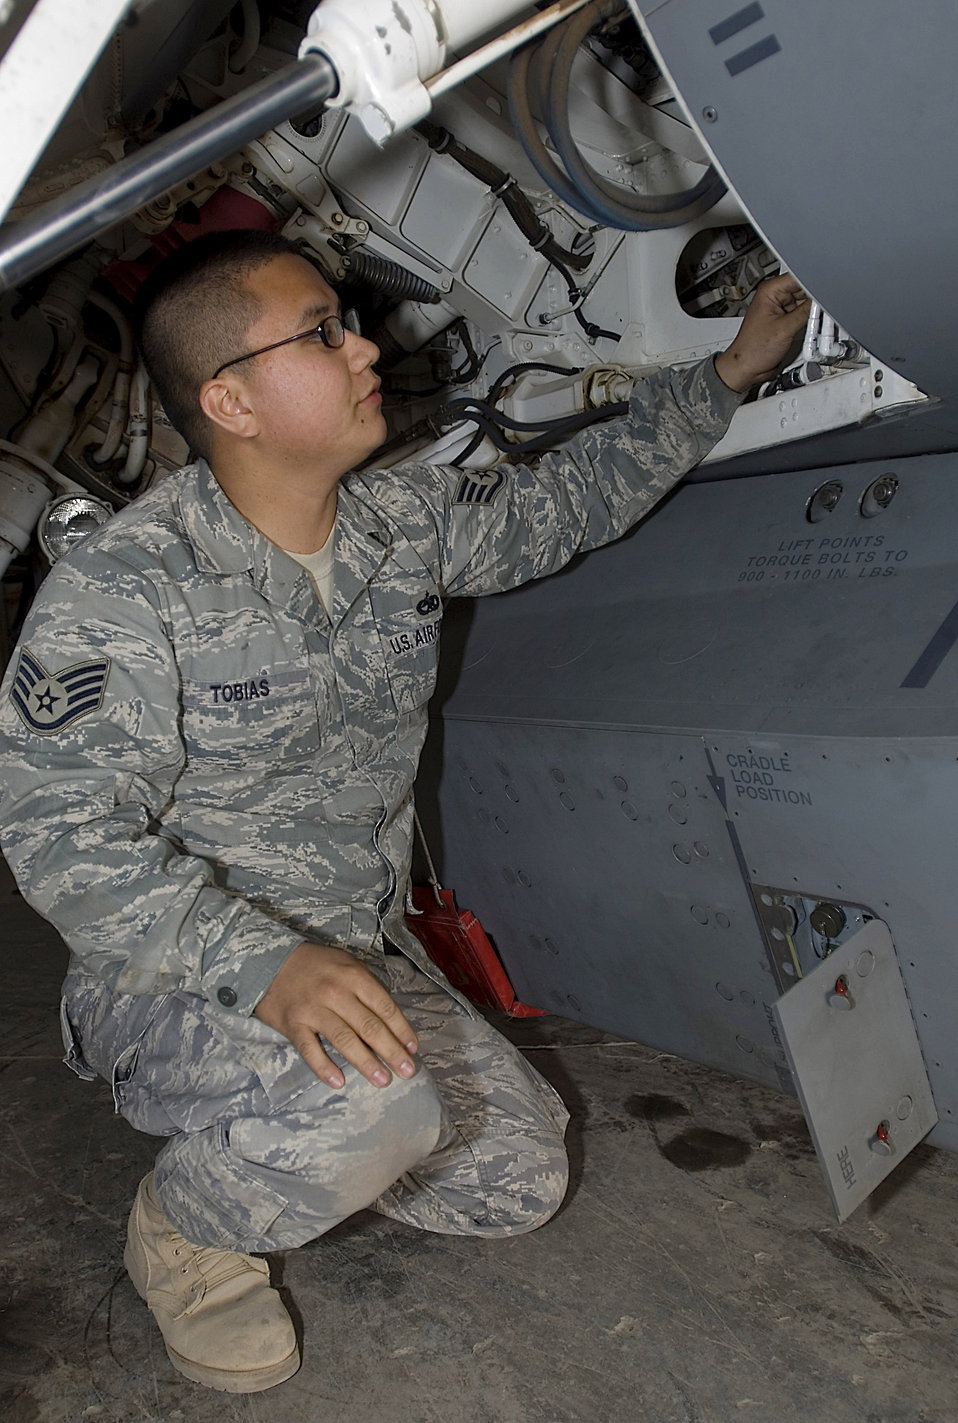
TARS pod brings picture into focus

Staff Sgt. Christopher Tobias checks the forward directional antenna Dec. 21 on a Theater Airborne Reconnaissance System pod mounted on an F-16 Fighting Falcon at Joint Base Balad, Iraq. Ground commanders use TARS imagery to achieve their tactical objectives. Sergeant Tobias, one of four 332nd Expeditionary Aircraft Maintenance Squadron avionics maintainers responsible for the 332nd Expeditionary Fighter Squadron's TARS pods, is a native of Long Beach, Calif., and is deployed from Luke Air Force Base, Ariz.